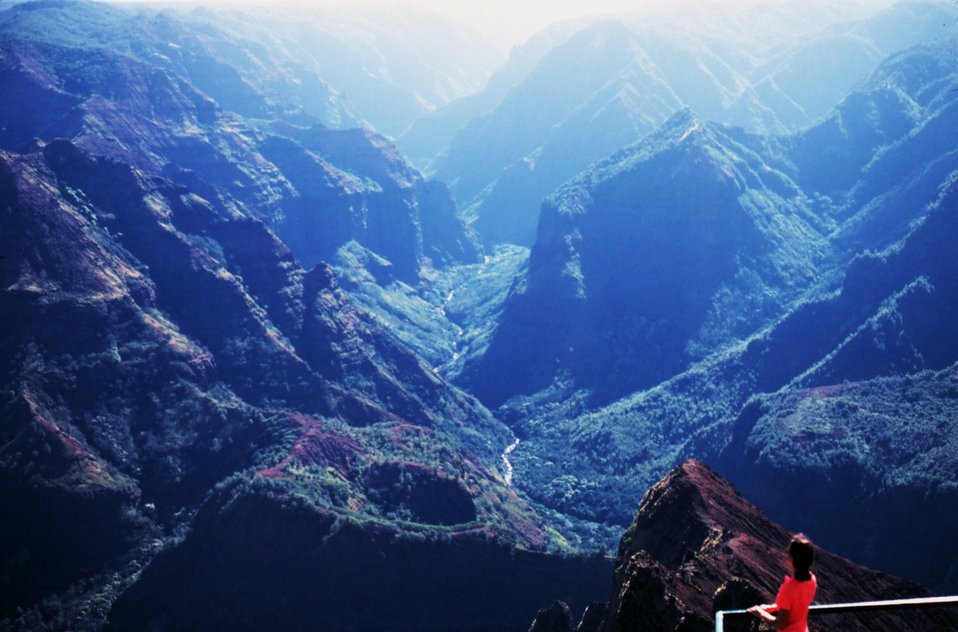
Waimea Canyon - the Grand Canyon of the Pacific